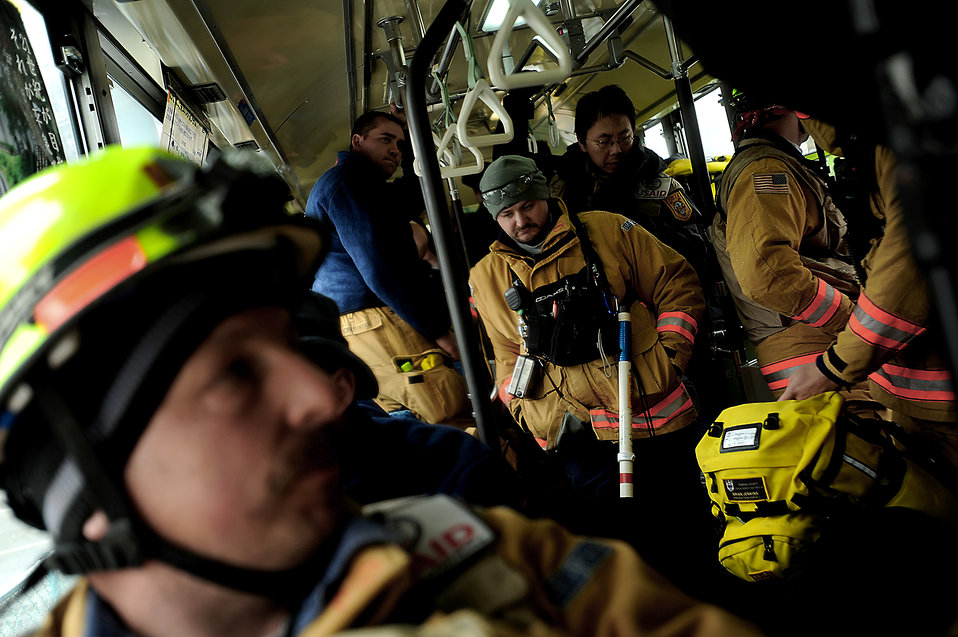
OPERATION TOMODACHI

Team members from the Fairfax County, Va. Task Force 1 Urban Search and Rescue ride back to base camp on the bus after searching structures and debris on March 16, 2011 in Kamaishi, Japan. A 9.0 Earthquake hit Japan on March 11, 2010 that caused a Tsunami that destroyed anything in its path.